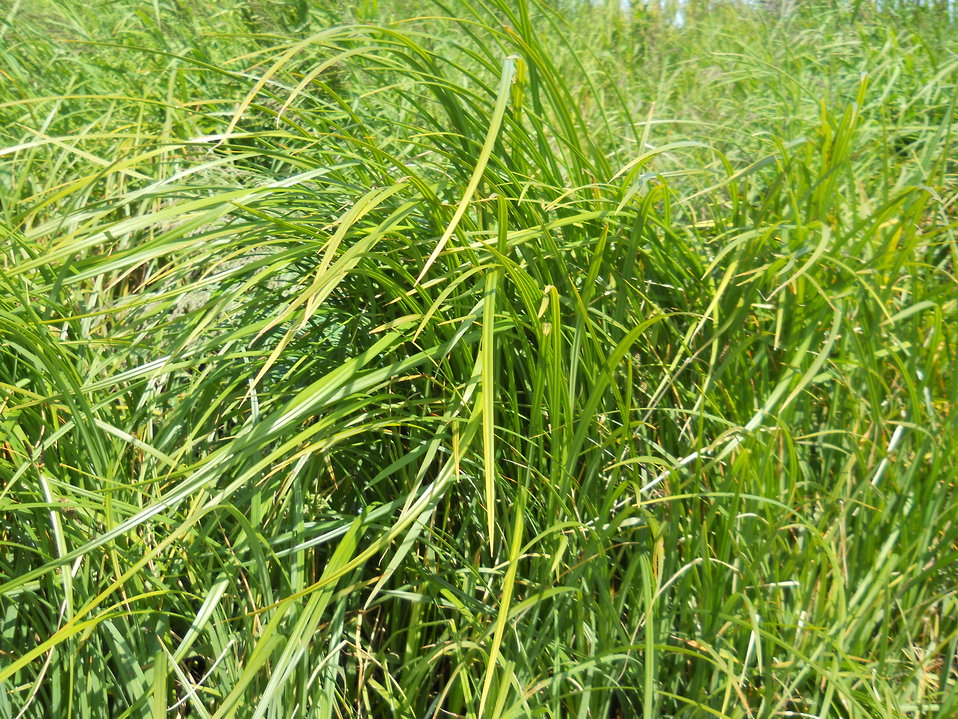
Grassland Closeup

Credit: USFWS
Photo taken by a Salmon Camp participant during a nature photography activity.

Source and Contact: Kodiak National Wildlife Refuge